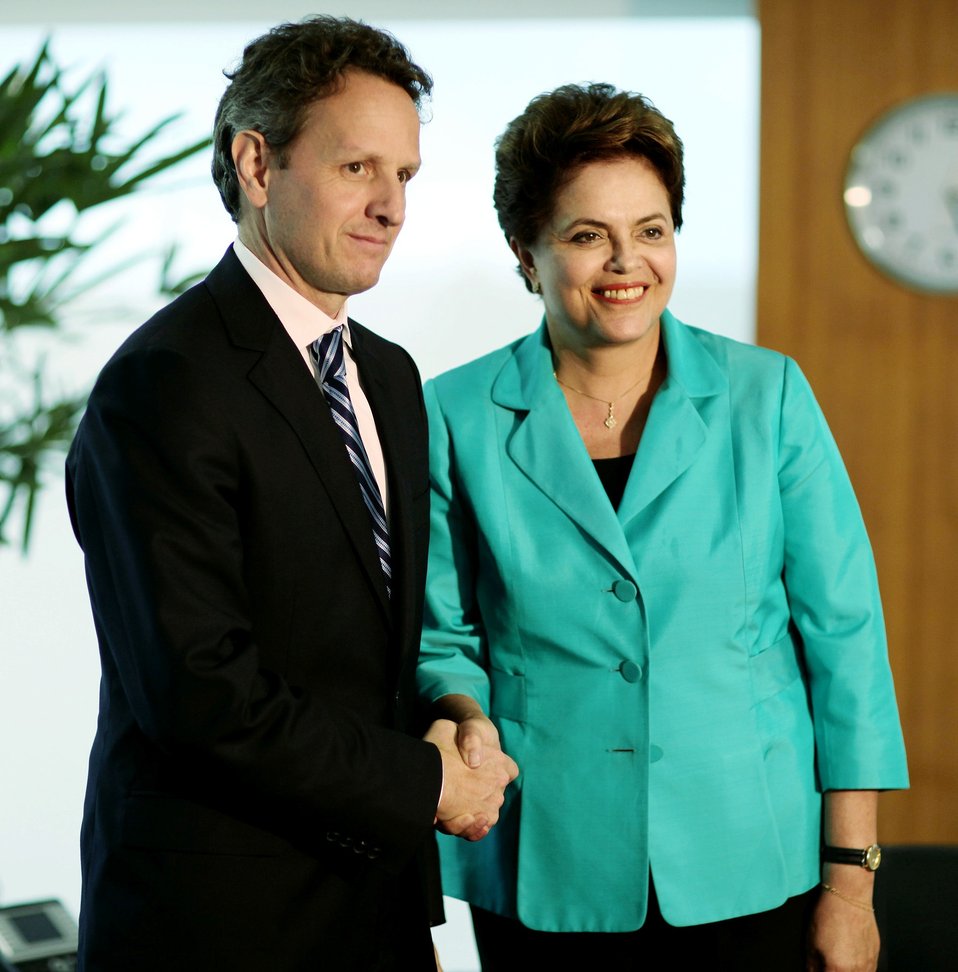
Secretary Geithner Travels to Brazil, 02/07/2011

On Monday, February 7, 2011, Secretary Geithner met with Brazilian President Dilma Rousseff in Brasilia, Brazil just one month after her inauguration and ahead of President Obama’s announced visit to Brazil in March.